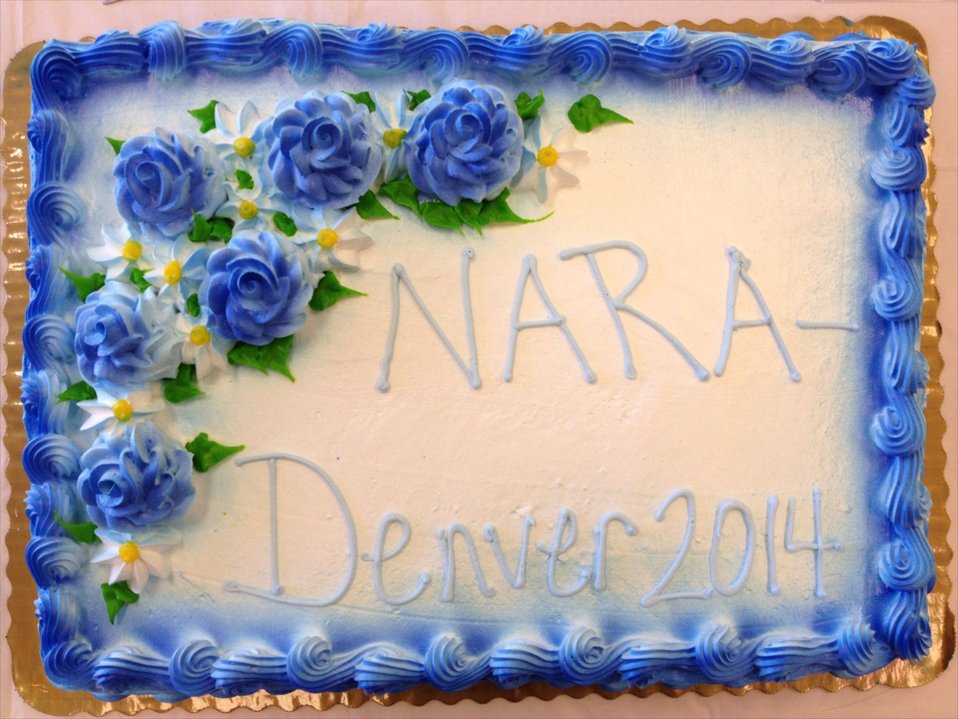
Cake for NARA Denver's Local Employee Recognition Program; Location: National Archives at Denver, Broomfield, CO